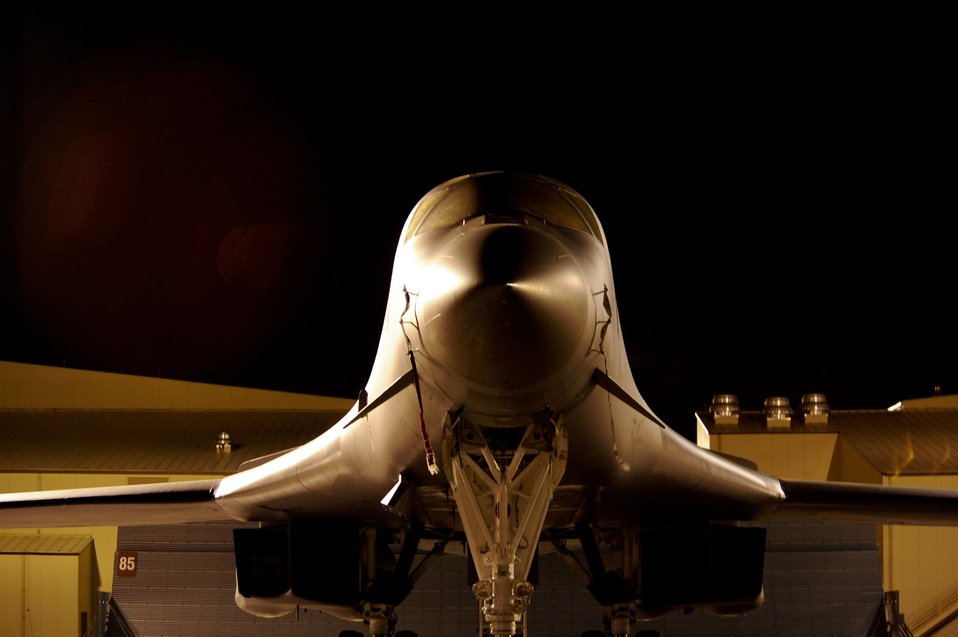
Inspection of a B-1B Lancer

A B-1B Lancer is ready for the next mission on the flightline at Ellsworth Air Force Base, S.D., March 31, 2010.